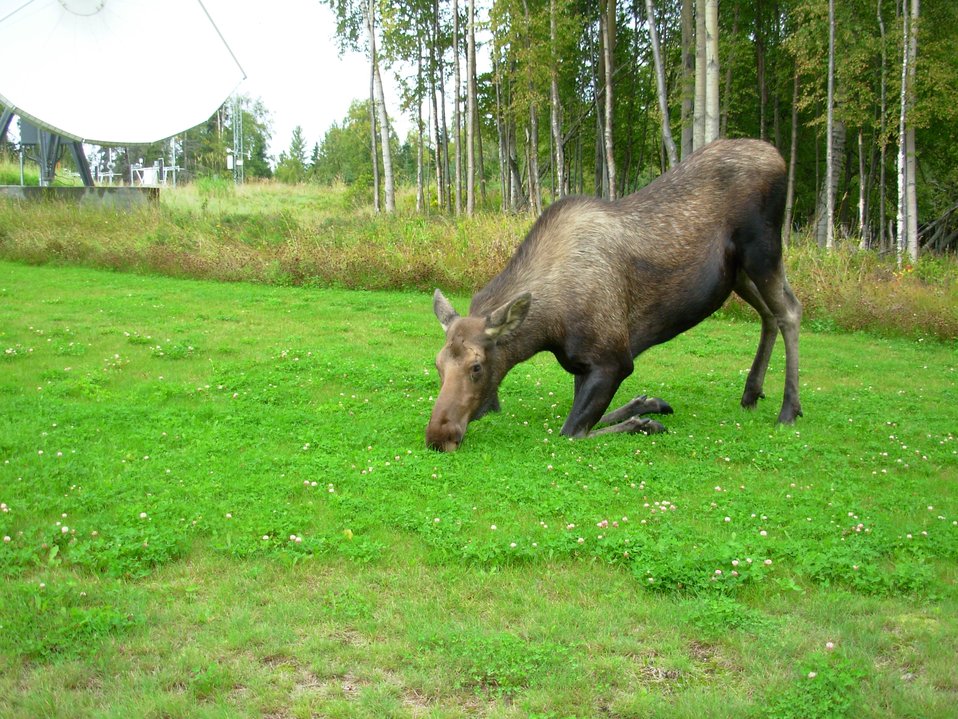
Cow moose kneeling to reach the clover. Note satellite dish and weather gear in background.